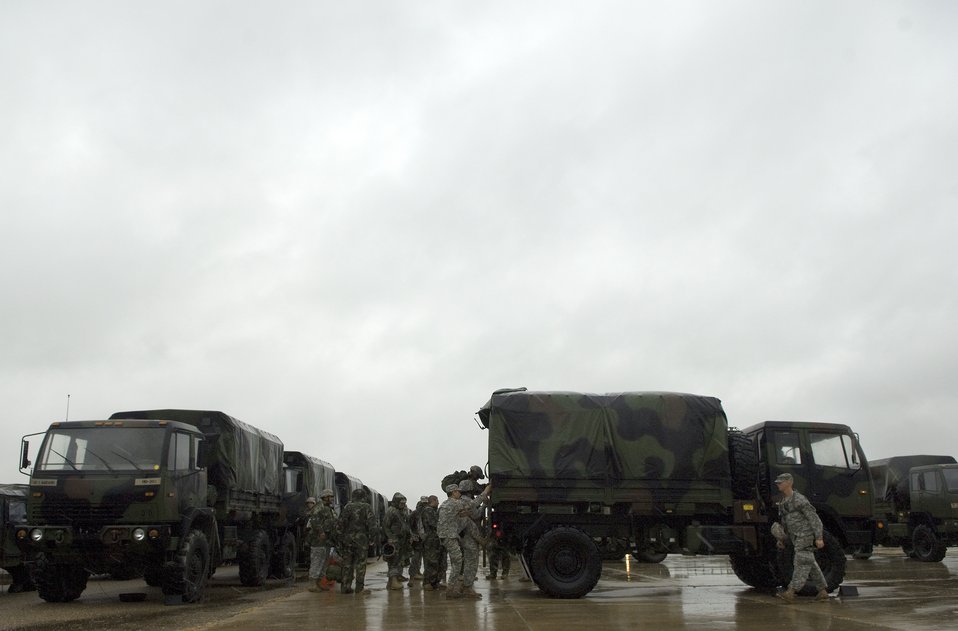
Texas military forces ready for Hurricane Dolly landfall

Members of the 449th Aviation Support Battalion arrive at to the Standing Joint InterAgency Task Force headquarters located at the Army National Guard Armory July 22 at Weslaco, Texas. Texas military forces are in southern Texas in anticipation of heavy flood relief efforts caused by Hurricane Dolly. The 449th Aviation Support Battalion are deployed from San Antonio.